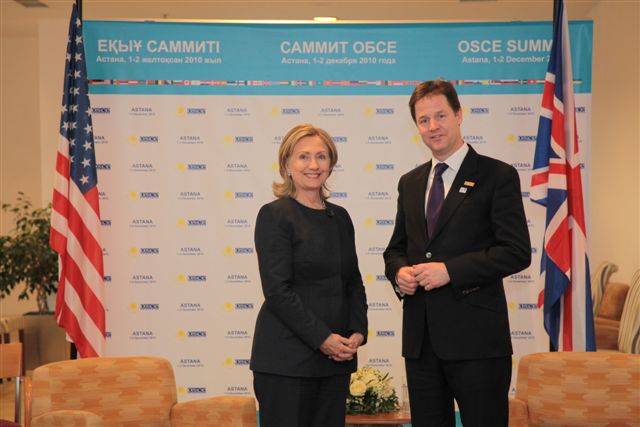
Secretary Clinton Holds a Bilateral Meeting With UK Deputy Prime Minister Clegg

U.S. Secretary of State Hillary Rodham Clinton holds a bilateral meeting with UK Deputy Prime Minister Nick Clegg at the OSCE Summit in Astana, Kazakhstan, on December 1, 2010.